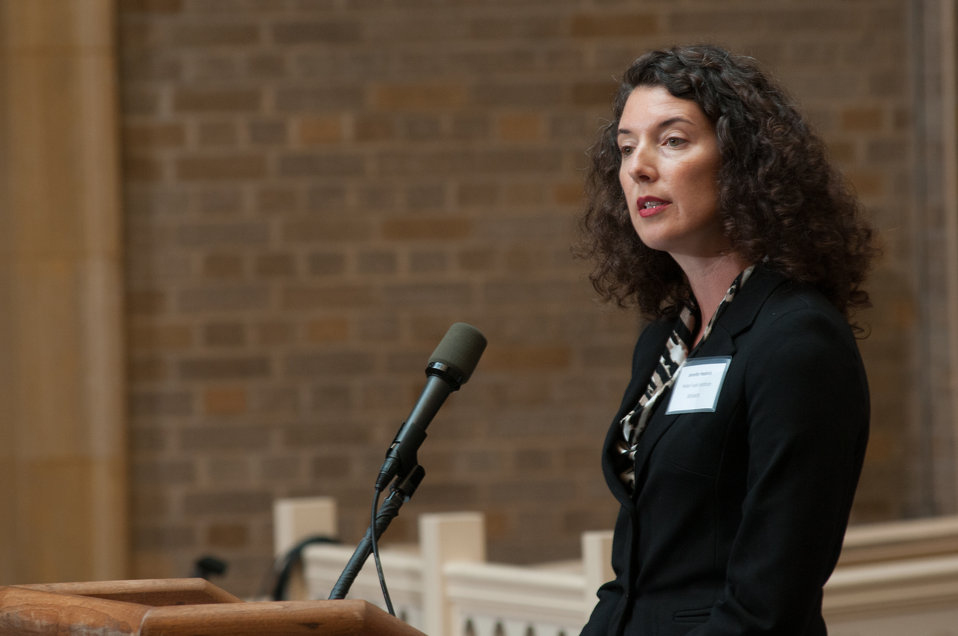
Pellet Fuels Institute Executive, Director Jennifer Hedrick speaks during the U.S. Department of Agriculture (USDA) Wood Energy Memorandum of Understanding, and awarded wood energy grants announcements event, at the USDA Headquarters, in Washington, D.C., on Wednesday, September 11, 2013. Signing the MOU are partnership leaders Biomass Thermal Energy Council, Executive Director Joseph Seymour; Alliance for Green Heat, President John Ackerly, USDA Agriculture Deputy Secretary Krysta Harden; Pellet Fuels Institute Executive, Director Jennifer Hedrick; Biomass Power Association, President and CEO Bob Cleaves, and Secretary Thomas Vilsack who signed it earlier. Moderating the event is Under Secretary for Rural Development Doug O’Brien.
The partnership agreement focuses on promoting wood energy nationwide as a means to address fire risks, bolster rural economic development, improve air quality, and help meet the Obama Administration’s renewable energy and energy efficiency goals. These organizations support the use of wood energy across the scale of users – from residential users, to commercial and intuitional facilities, to industrial production of heat and or electricity to drive businesses and feed the electrical grid.
Under the terms of the five grants announced by Deputy Secretary Harden, private, state and federal organizations will work together to stimulate the development of additional wood energy projects in their states. Collectively, $2.9 million will be spent o this effort -- $1.1 million on federal funds and $1.8 million in non federal funds. For more information o0n the cooperative agreement program, visit na.fs.fed.us.werc/wood-energy/ USDA Photo by Lance Cheung.